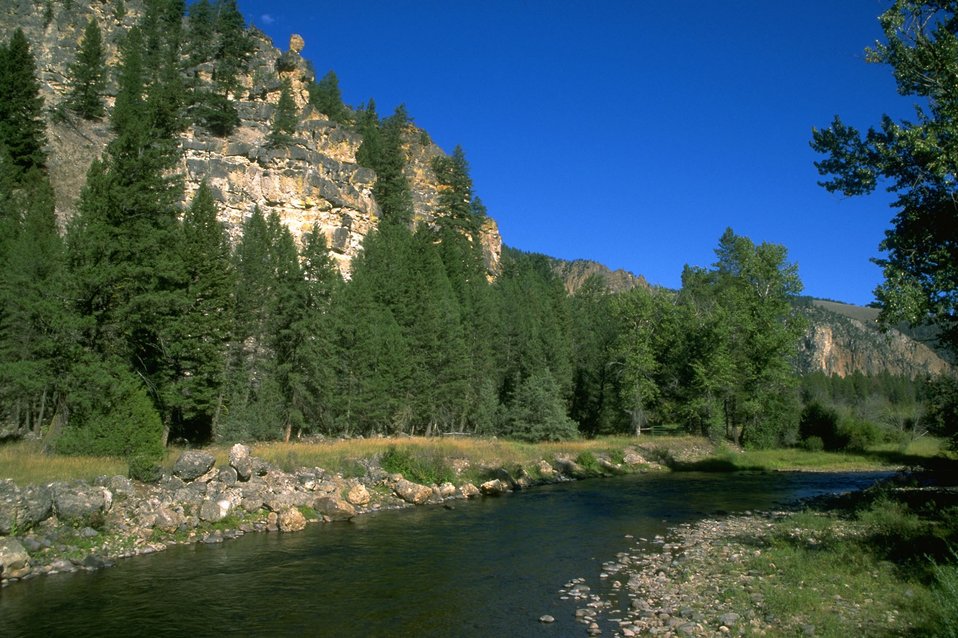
Rock Creek near Squaw Rock ACEC (area of critical environmental concern)